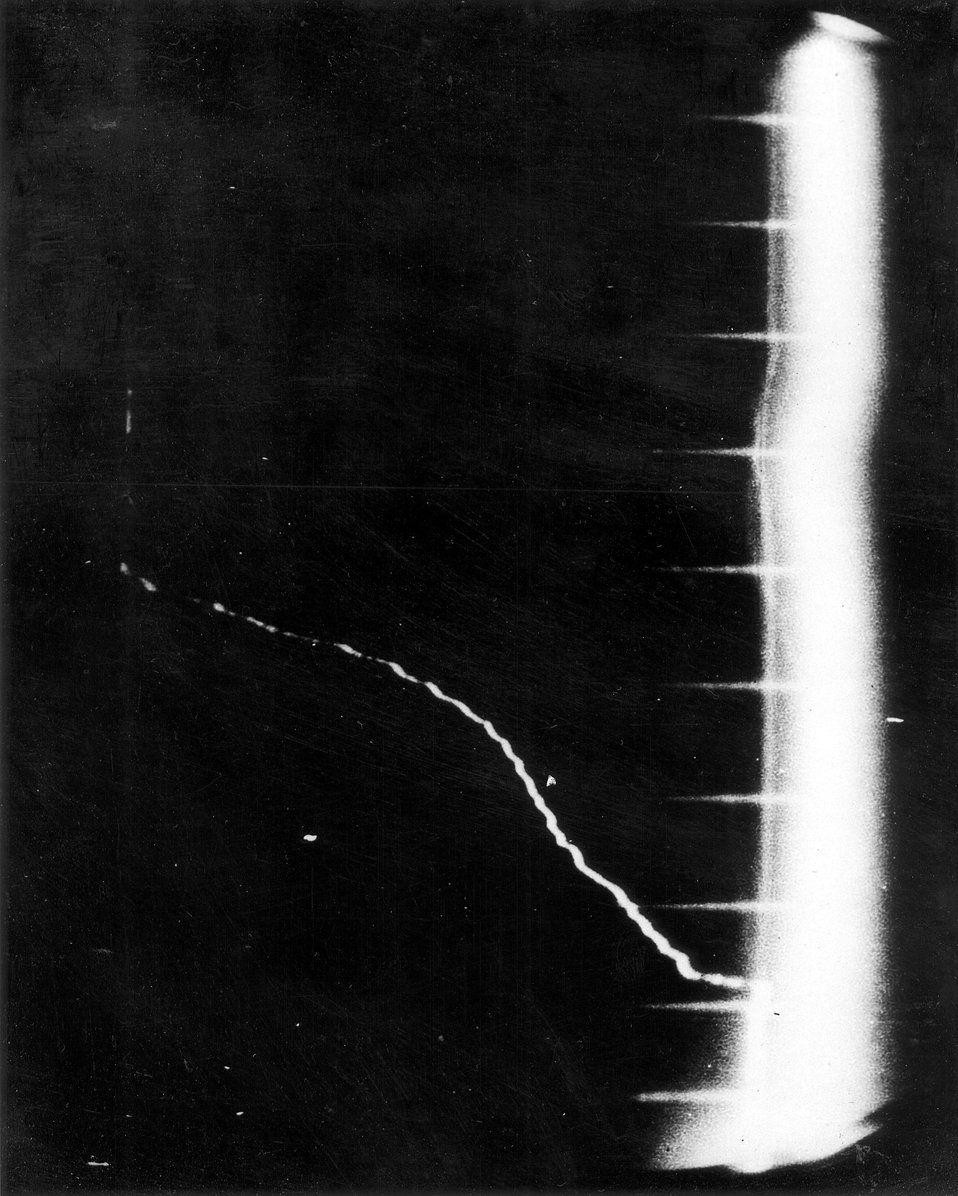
Actual photograph of oscilloscope screen recording 1.3 billion volt energy achieved by the Cosmotron at the Brookhaven National Laboratory on May 20, 1952.